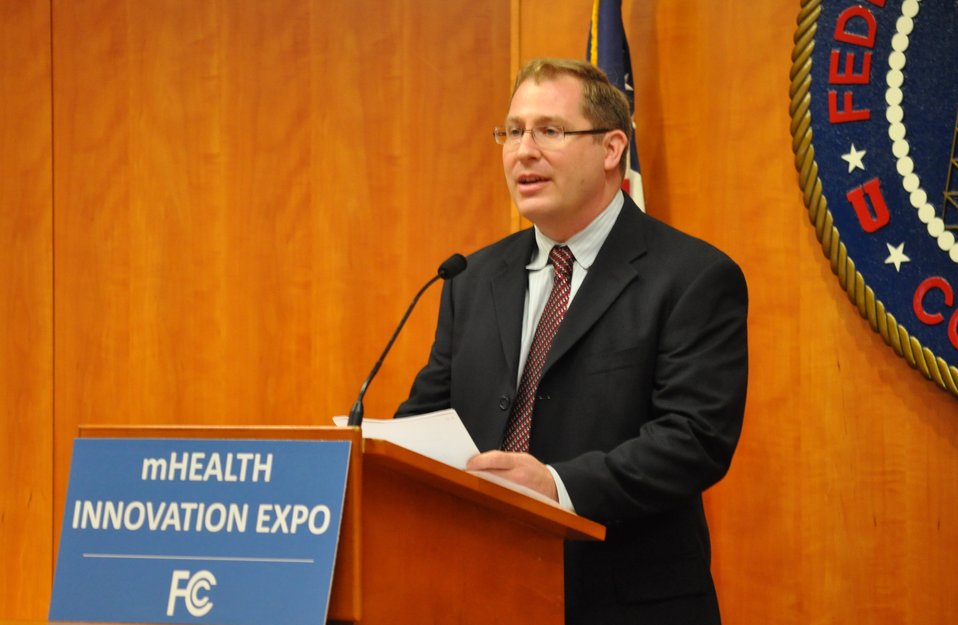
12.6.13 mHealth Innovation Expo

Matthew Quinn, Director of Healthcare Initiatives, FCC